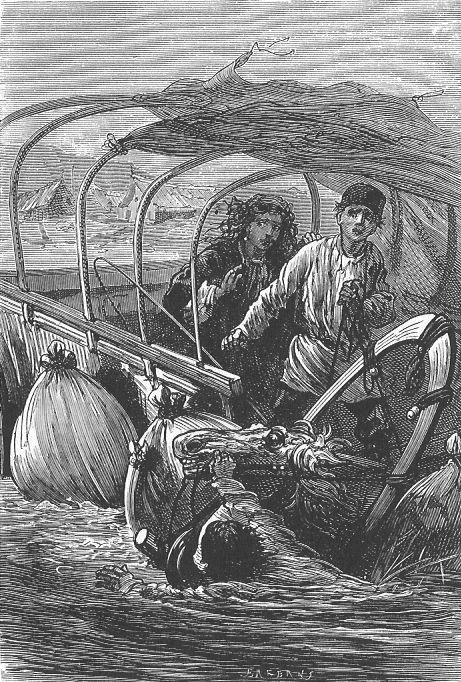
An illustration from the novel 'Michael Strogoff: The Courier of the Czar' by Jules Verne drawn by Jules Férat. Polski: Ilustracja powieści Juliusza Verne'a 'Michał Strogow, kurier carski' autorstwa Julesa Férata. Français : 'Michel Strogoff. Le courier du tzar', Jules Férat. Français : Empoignant d’un bras vigoureux la bride…